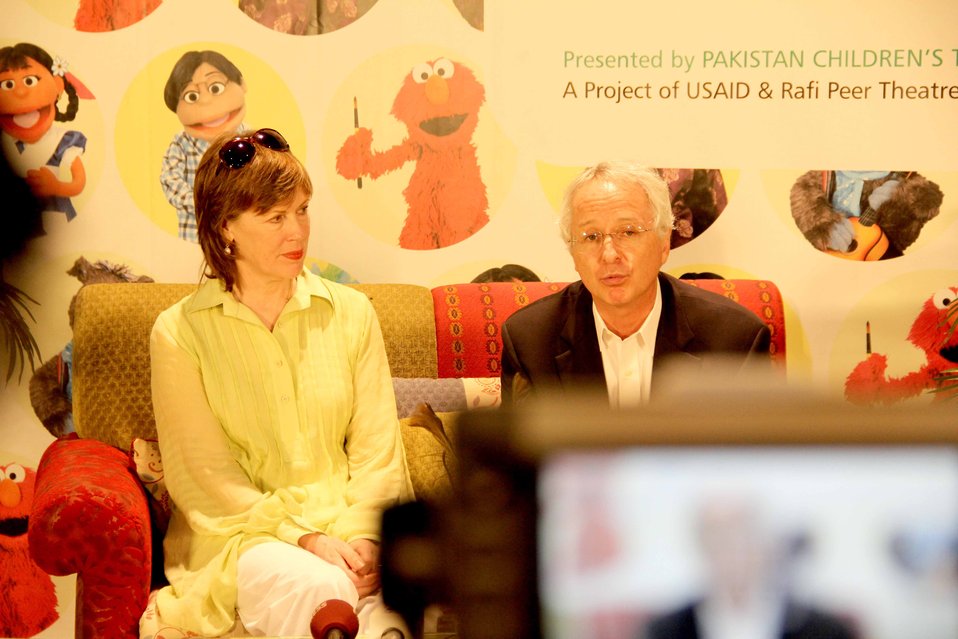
U.S. Ambassador’s Visit to Sim Sim Hamara Highlights U.S. Commitment to Improved Children’s Education in Pakistan at Lahore on 28 April, 2012

US Ambassador Cameron Munter & his wife Dr. Marliyn Wyatt recored his message.